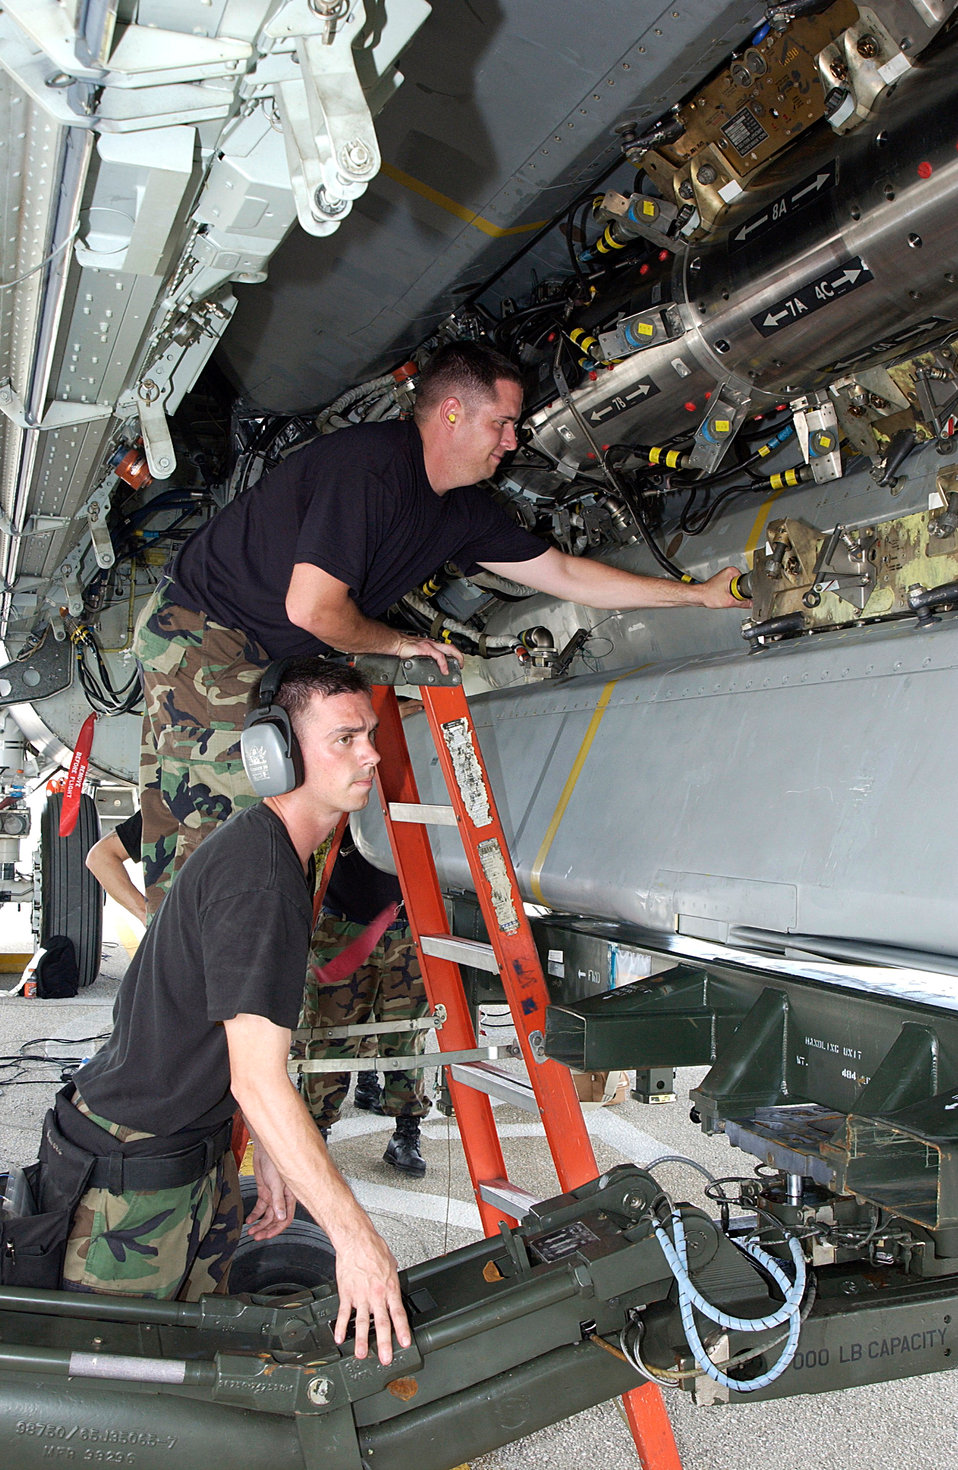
Cruise missile loading

ANDERSEN AIR FORCE BASE, Guam -- Staff Sgts. John Beldin (top) and Landon Favors, B-52 Stratofortress weapons loaders, prepare an air-launched cruise missle for loading on a B-52 here March 20. Aircraft and support troops from the 2nd Bomb Wing at Barksdale Air Force Base, La., are deployed as part of the 7th Air Expeditionary Wing.